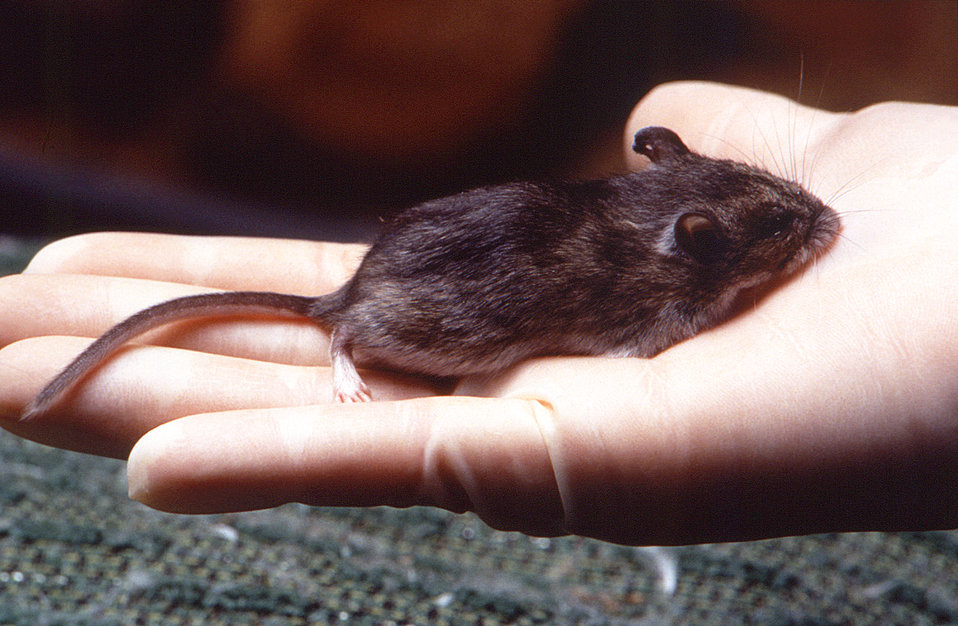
This photograph depicts a sterile latex-gloved hand holding an unknown specie of deer mouse, from the genus, Peromyscus.